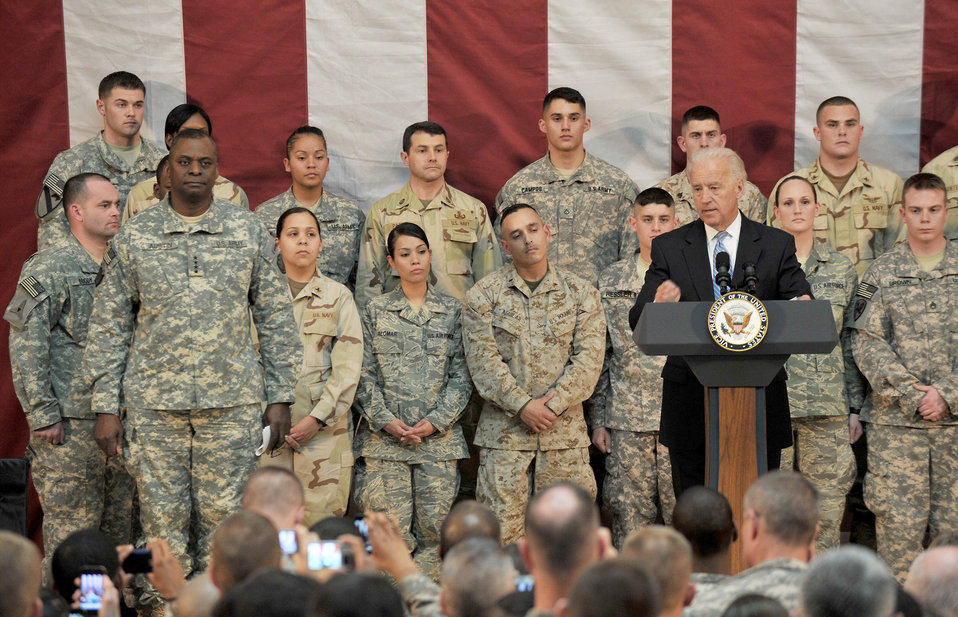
VPOTUS Gives Thanks

Vice President Joe Biden speaks to a crowd of more than 200 service members and civilians as they listen to his message of thanks and his appreciation for military members and their families Jan. 13, 2010, on Camp Victory, Iraq.